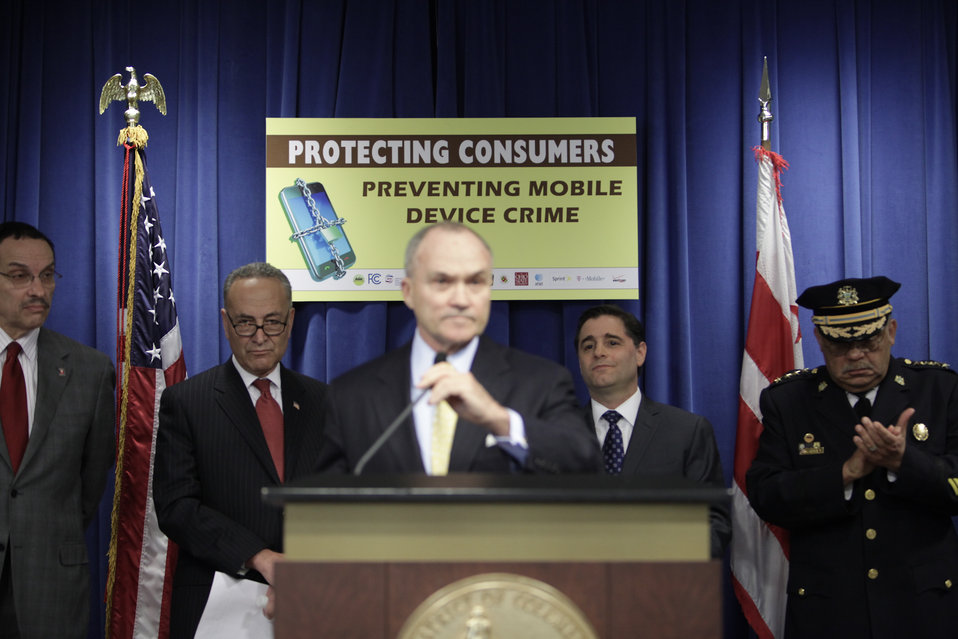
Commissioner Ray Kelly Speaks with Chairman Genachowski

Commissioner Ray Kelly of NYPD speaks in support of protecting consumers and curb smartphone & device theft with FCC Chairman listening at the John A. Wilson Building in Washington, DC on April 10, 2012.